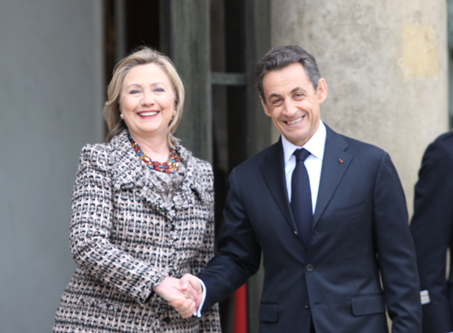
Secretary Clinton Is Welcomed By French President Sarkozy

U.S Secretary of State Hillary Rodham Clinton is welcomed by French President Nicolas Sarkozy to the Crisis summit on Libya at the Elysee Palace in Paris, France, on March, 19, 2011.